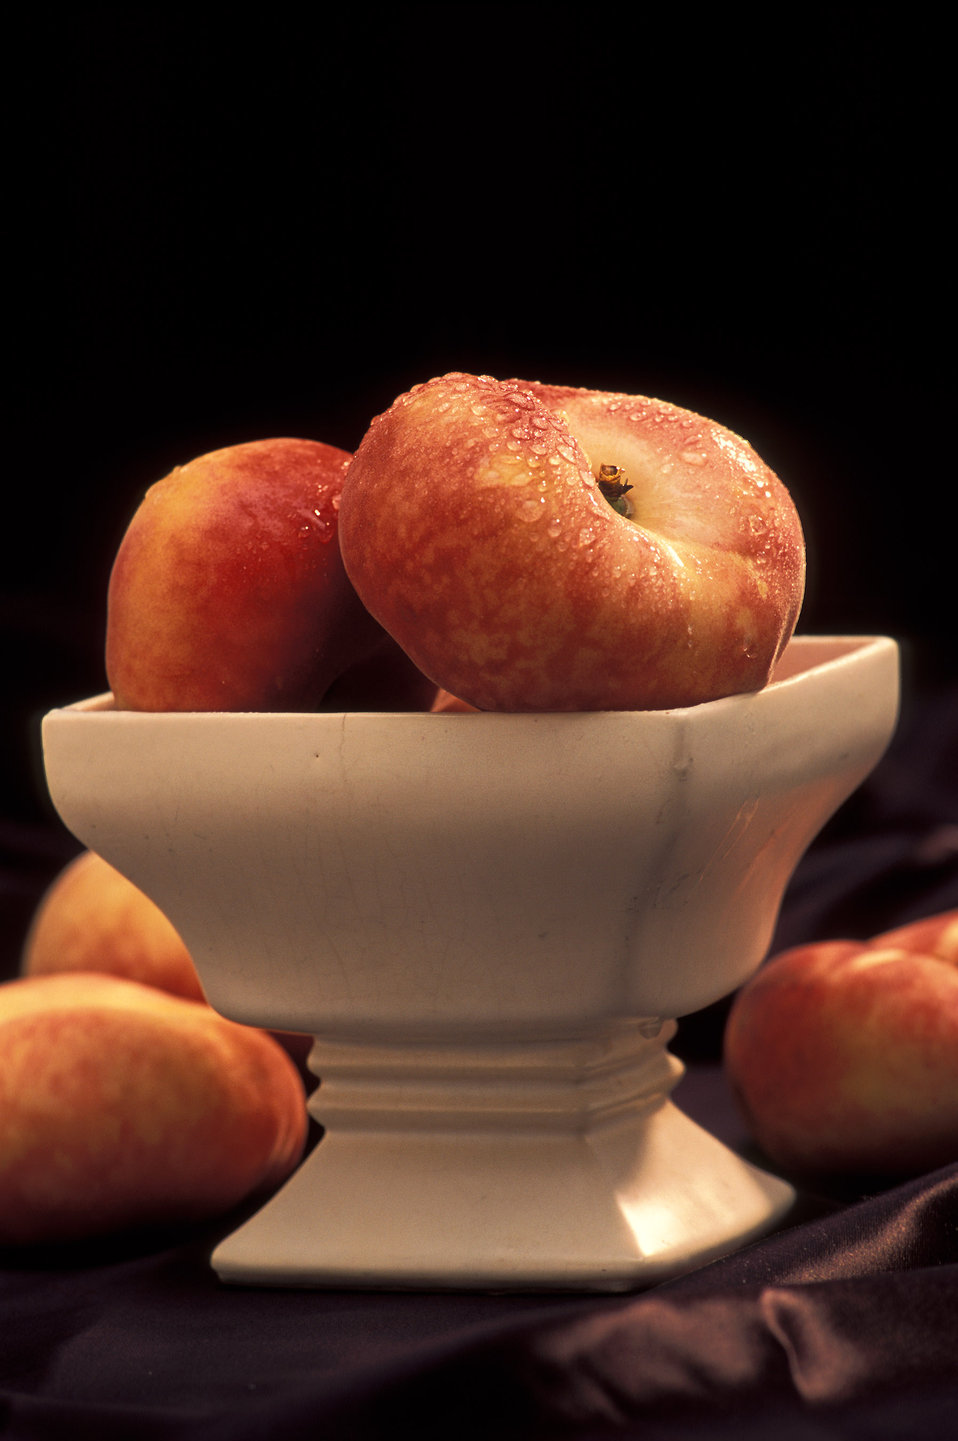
Peento-type Galaxy peaches are flatter and large, about 3 inches in diameter, sit in a bow.